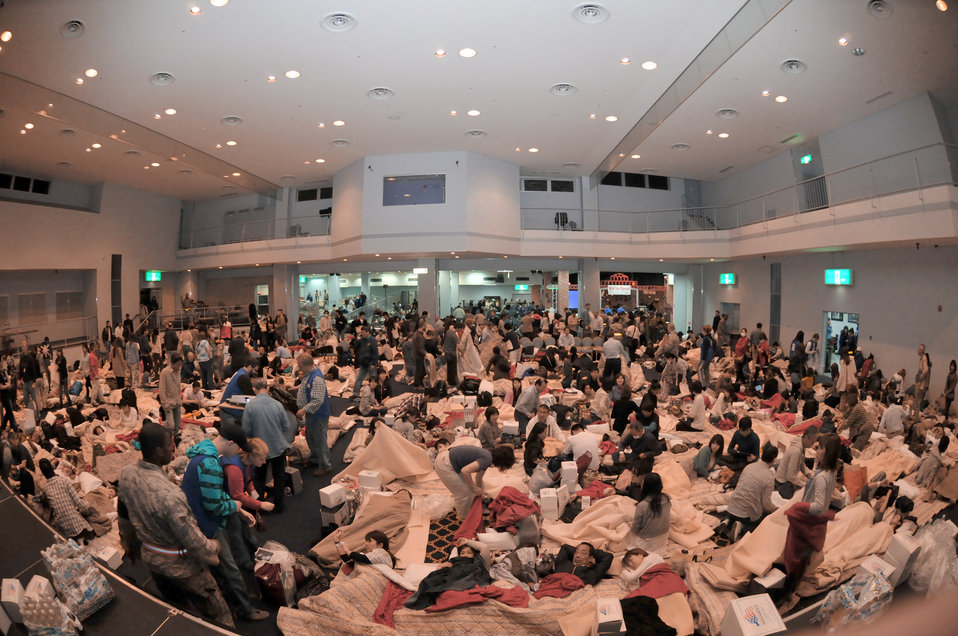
Taking shelter

American Red Cross volunteers provide blankets and pillows to passengers of a commercial airline flight taking shelter March 11, 2011, at Yokota Air Base, Japan. The passengers arrived at the base after their flights were diverted from Narita International Airport in Tokyo, due to an 8.9-magnitude earthquake.